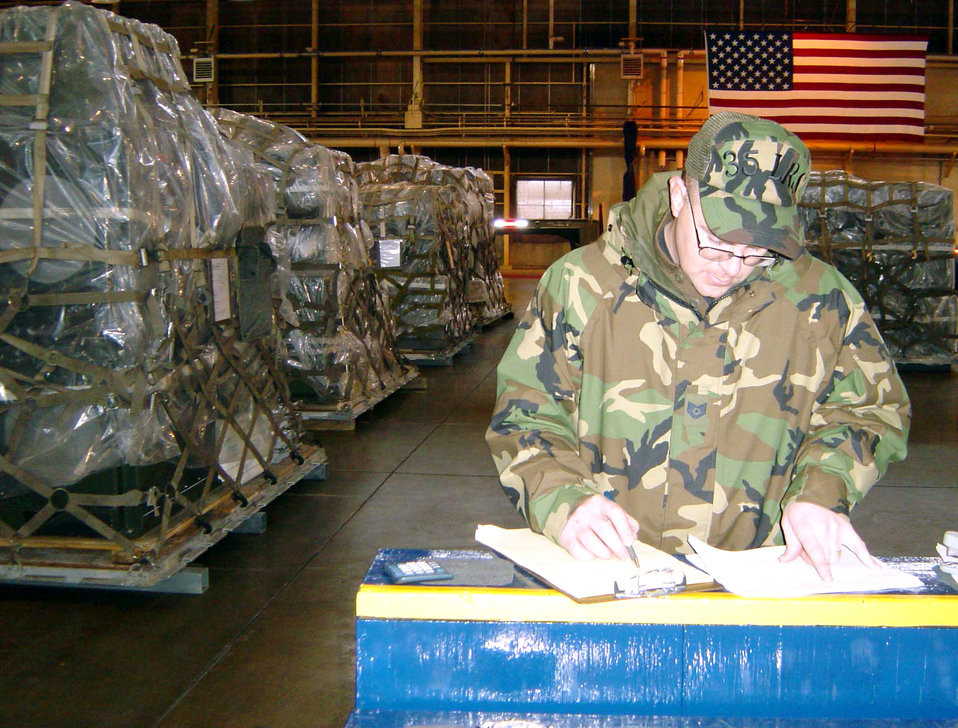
Frigid freight

MISAWA AIR BASE, Japan -- Tech. Sgt. Daniel Skurka checks the paperwork for communications equipment being prepared for shipment to areas affected by tsunamis Dec. 26. About 25 people and 70 tons of cargo from the 35th Fighter Wing here are scheduled to deploy to the region Jan. 6 to assist relief operations there. Besides the communications cargo, 35th FW officials are scheduled to ship medical equipment and three airfield crash rescue firefighting vehicles. Sergeant Skurka is assigned to the 35th Logistics Readiness Squadron.